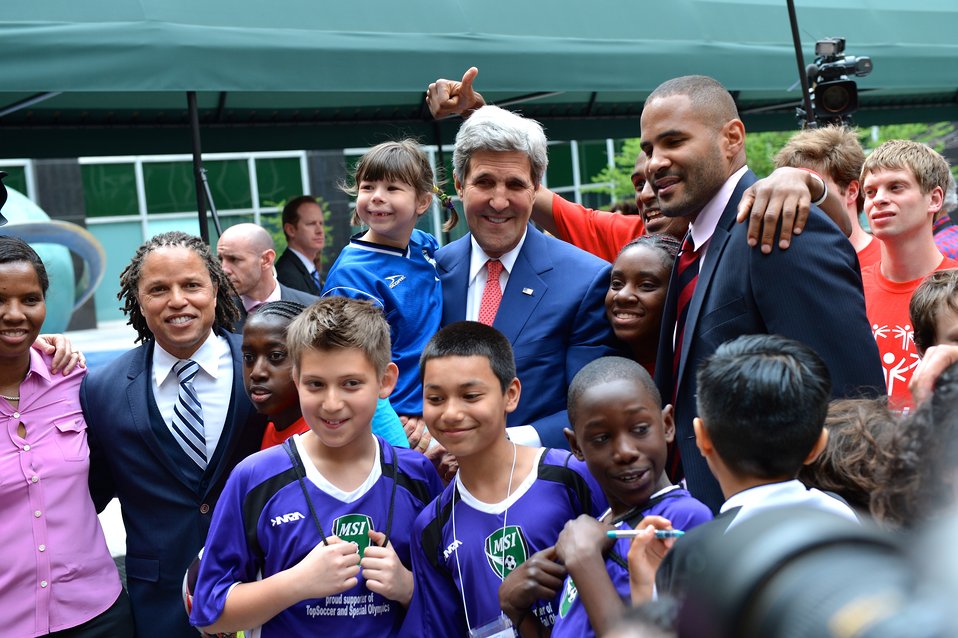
Secretary Kerry With Young Athletes and Sports Envoys Scurry, Jones and Sanneh

U.S. Secretary of State John Kerry poses for a photo with athletes from local youth soccer organizations and Sports Envoys Briana Scurry, Cobi Jones, and Tony Sanneh at the U.S. Department of State in Washington, D.C., on April 14, 2014.